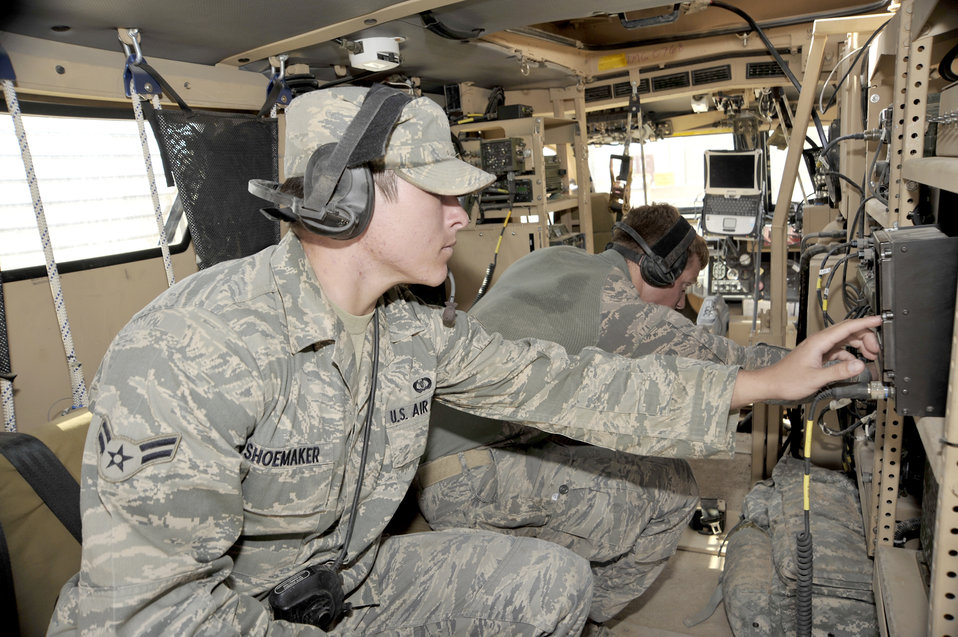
Airmen assist Army ground movements in Iraq

Senior Airman Donald McKee and Airman 1st Class John Shoemaker check radio equipment inside their mine-resistant ambush-protected vehicle Aug. 3, 2010, at Camp Liberty, Iraq. Airmen McKee and Shoemaker are from the 82nd Air Support Operations Squadron, Det. 2.